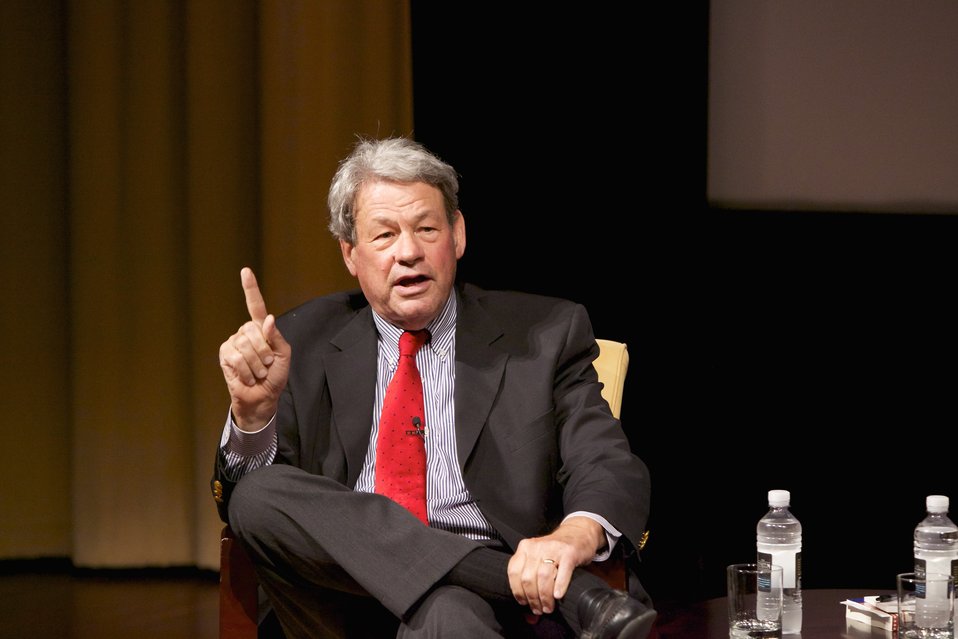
A Nation of Immigrants: How They Shaped America